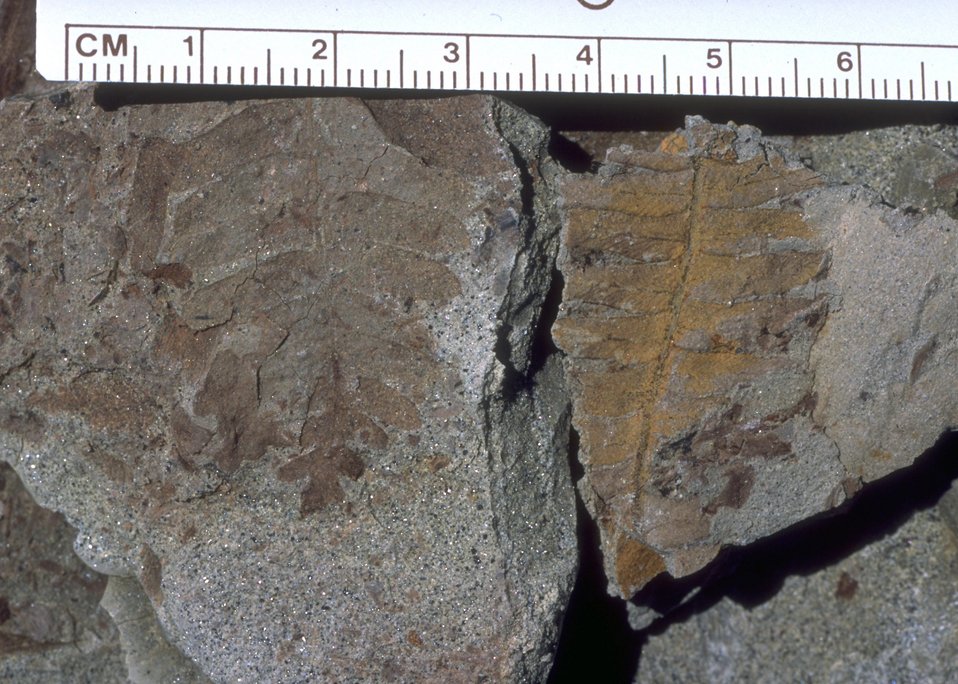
Close up of fossil vegetation, Cedar Ridge Paleo area, Worland Field Office.